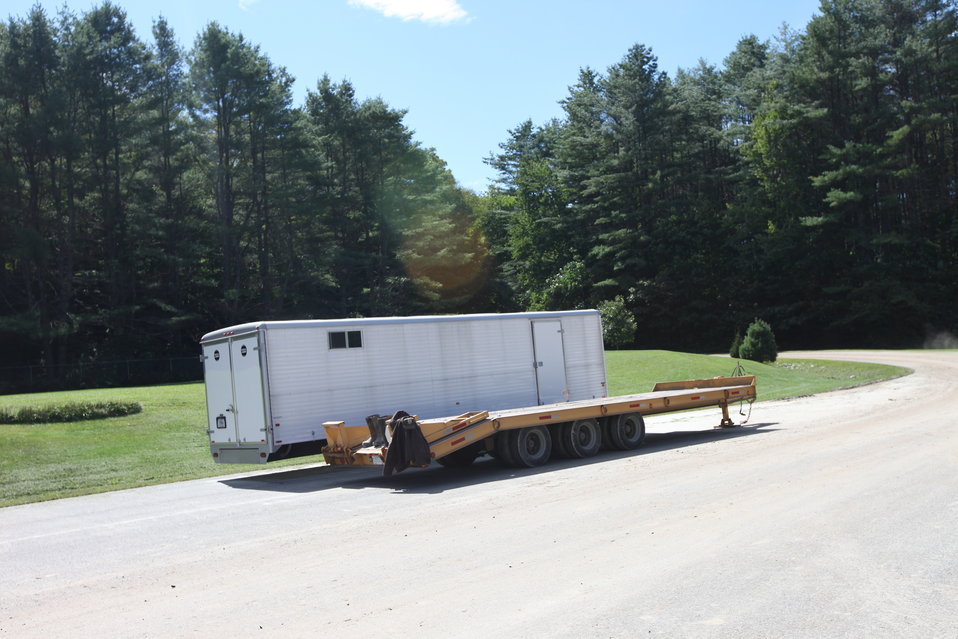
Storm damage relief at White River NFH

Heavy equipment operators came from other USFWS stations to help clean up.